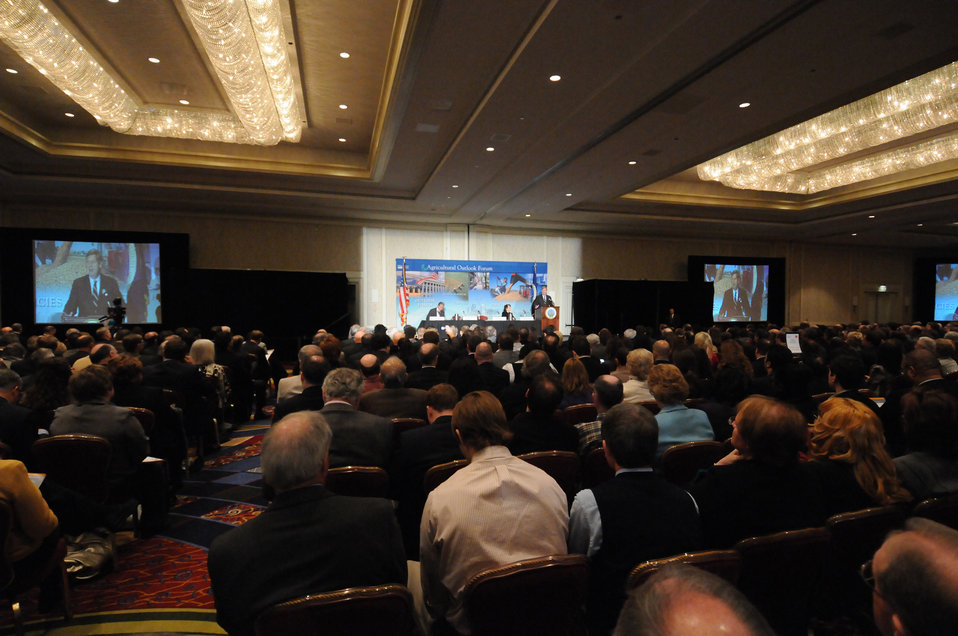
Agriculture Secretary Tom Vilsack makes remarks to a packed house at the World Agriculture Outlook Board Forum held in Arlington, VA, on Thursday, February 24, 2011, USDA Photo by Lance Cheung.